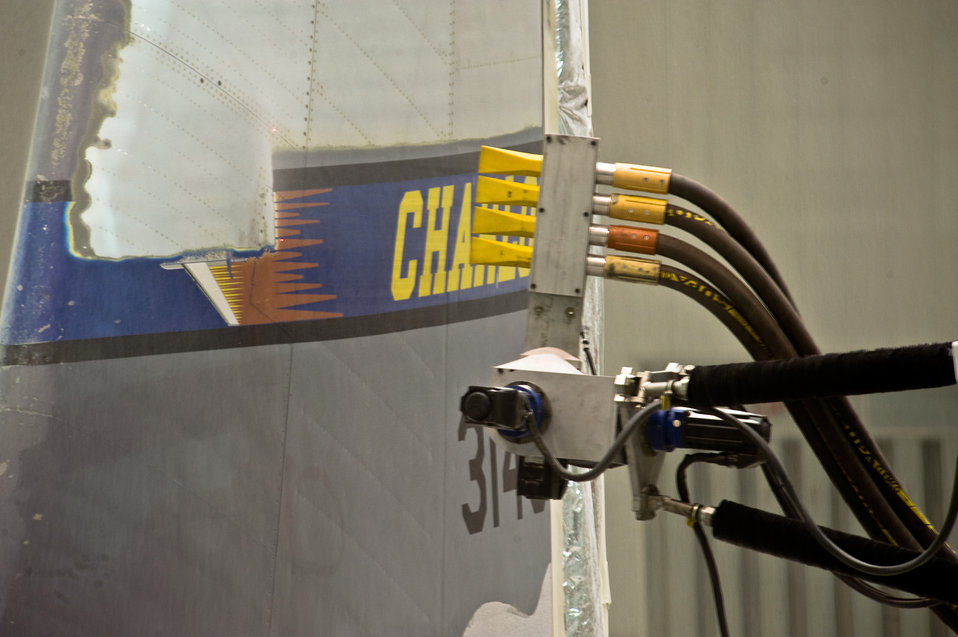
Depaint the big easy way

A painter controls one of the four Area Multi-axis Platforms, or AMPs, to depaint a C-130 Hercules at the 402nd Maintenance Support Squadron at Robins Air Force Base, Ga., Oct. 8, 2009. The operator controls the three-axis movement of the AMP's four laser aimed nozzles that shoots compressed air and media at painted surfaces. The process breaks up the paint and reveals the bare surface underneath it. Inside the cab, fresh air is pumped in to breathe and to push plastic beads and paint particles out of cab openings.